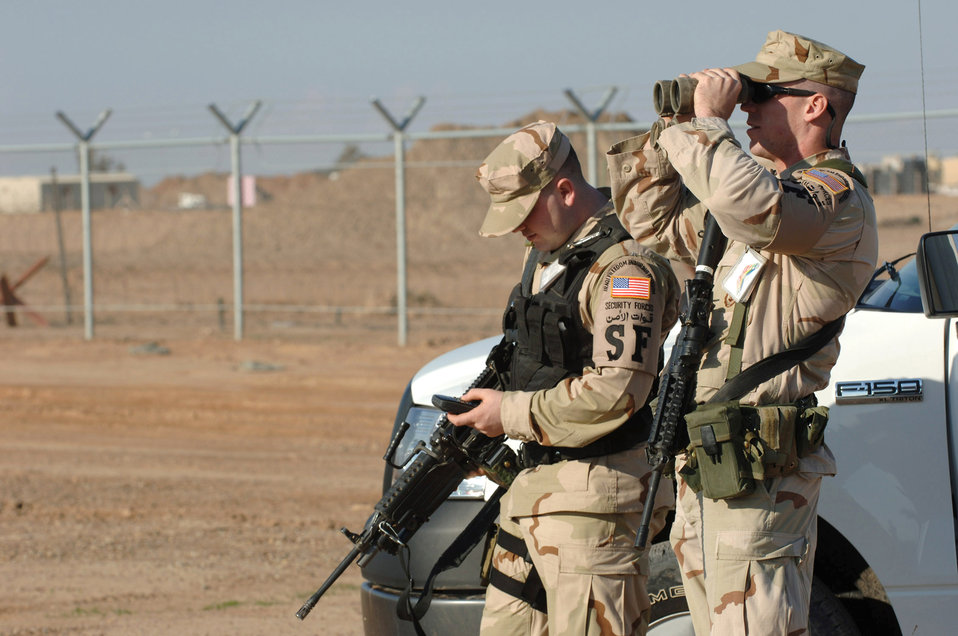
Security forces Airmen protect Iraq's combat airpower hub

Tech. Sgt. Michael Moore and Senior Airman Taliesin Fortmuller use a Global Positioning System receiver and binoculars to pinpoint and identify the point of impact and any possible unexploded ordnance after an indirect fire attack Feb. 19 against Balad Air Base, Iraq. The Airmen are assigned to the 332nd Expeditionary Security Forces Squadron.